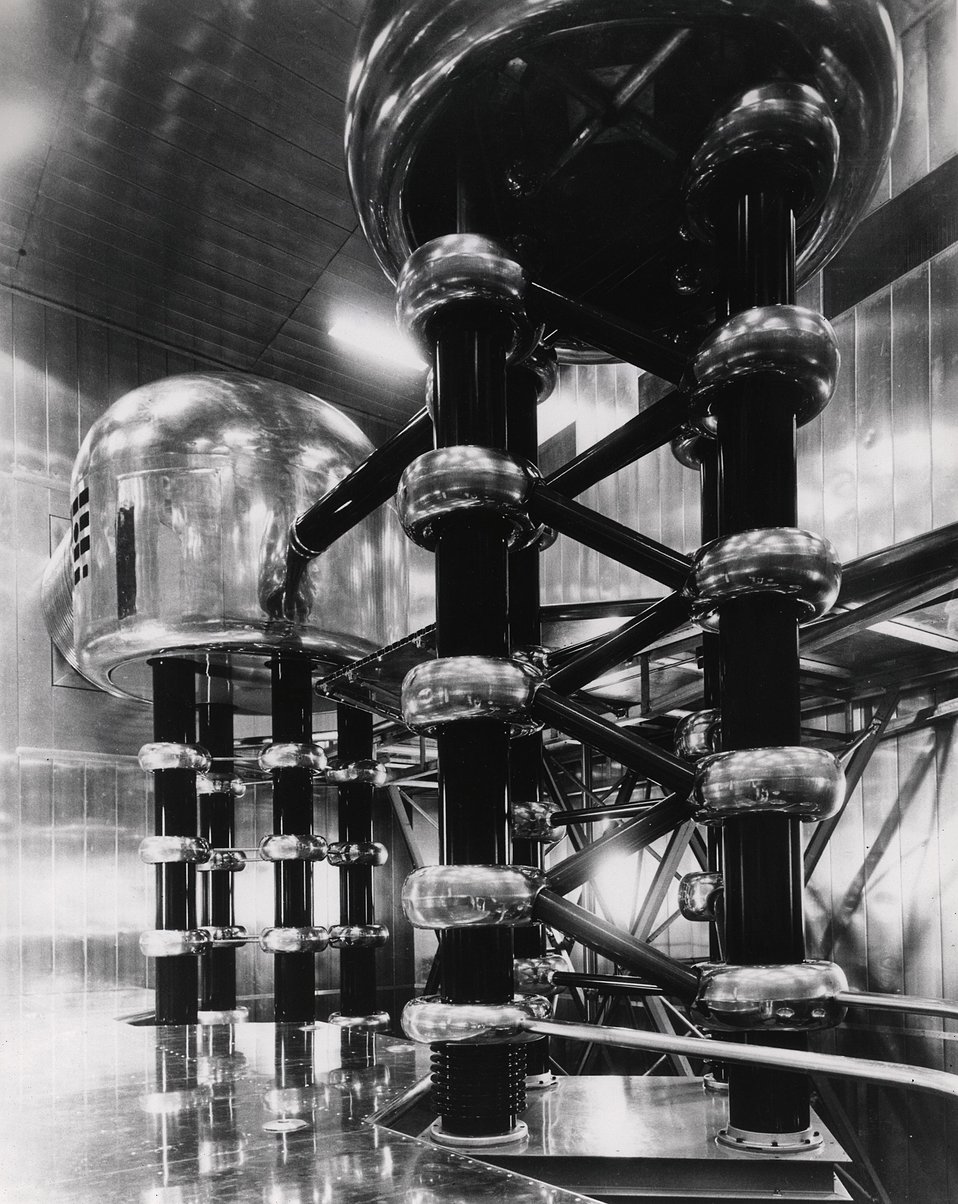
Accelerator injector system of the ZGS nearing completion at the Argonne Lab SW of Chicago.
c.1963